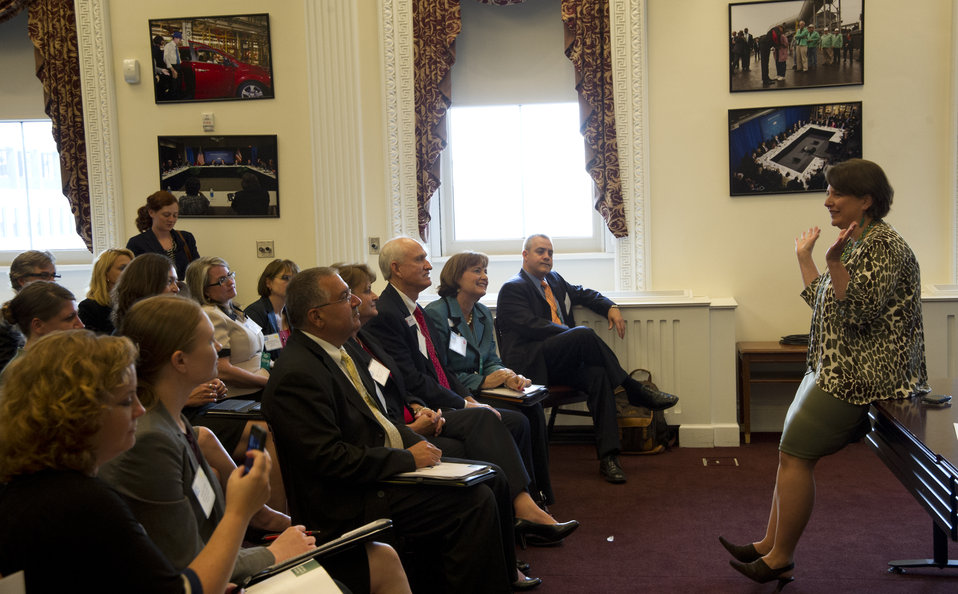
Deputy Agriculture Secretary Kathleen Merrigan speaks to the White House Forum on Regional Innovation in Rural America at the White House, Eisenhower Executive Office Building in Washington, D.C., on Wednesday, June 13, 2012.